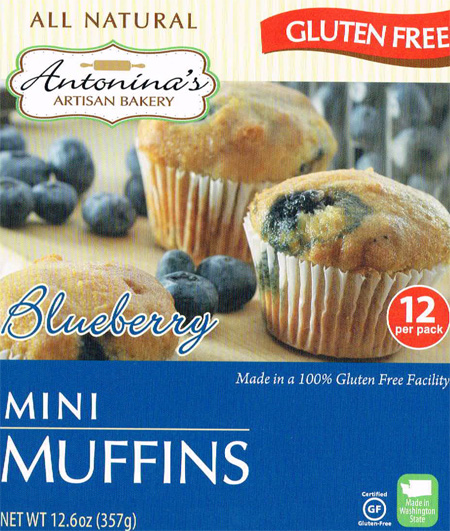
RECALLED – Gluten free blueberry mini muffins

December 12, 2013 – Product Recall – Pin Hsiao & Associates, LLC. Issues Allergy Alert on Undeclared Walnuts in Gluten Free Blueberry Mini Muffins - 12 pk.